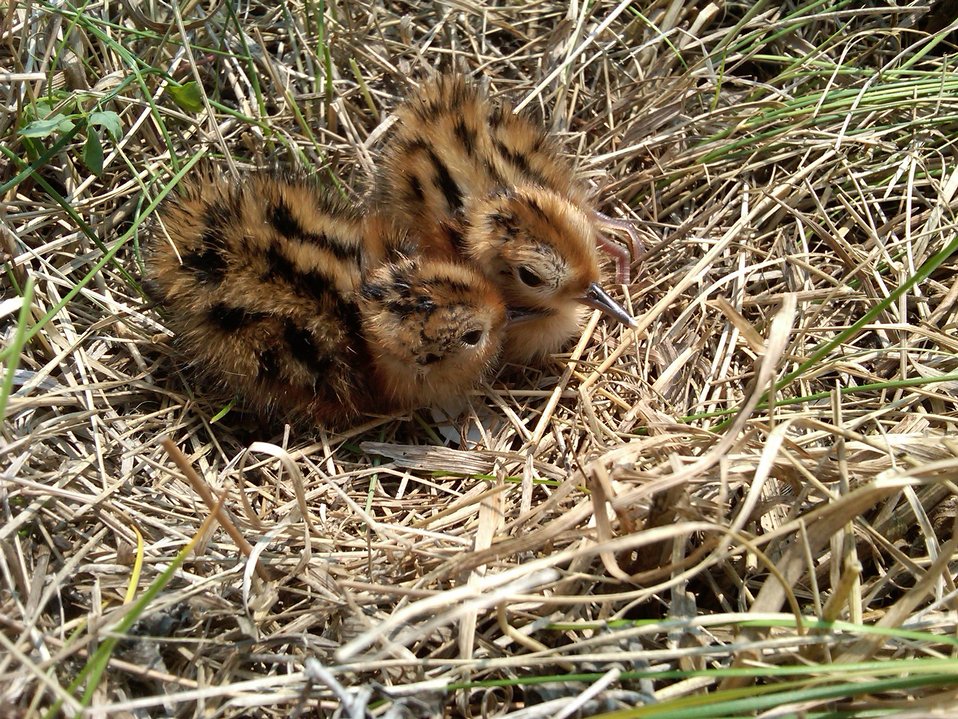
Wilson's Phalarope Chicks

Jackie Jacobson/USFWS